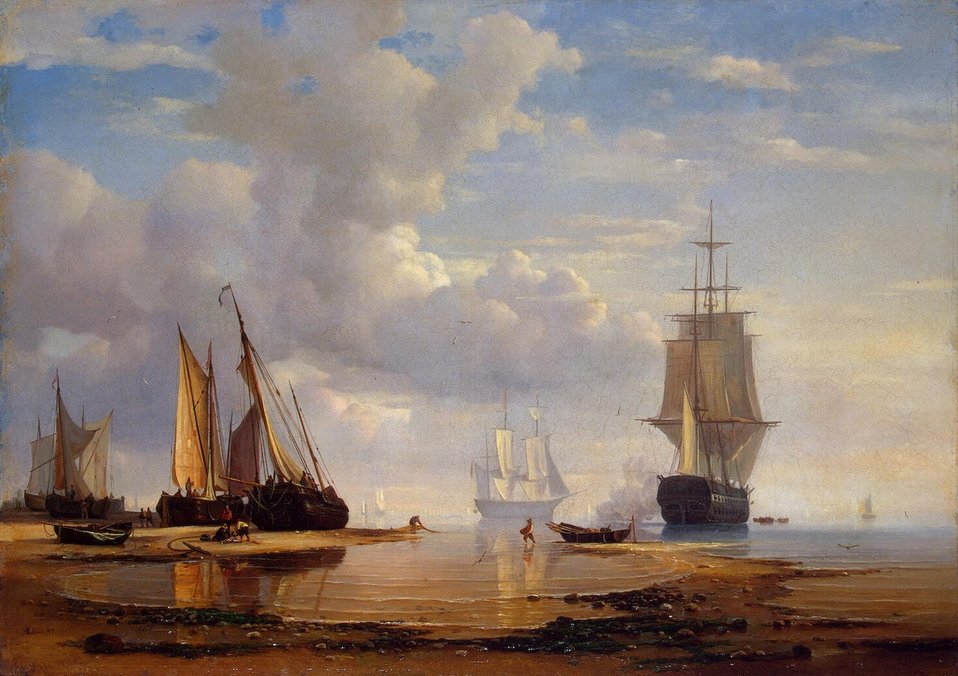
AF Vollmer - Blick auf das Meer